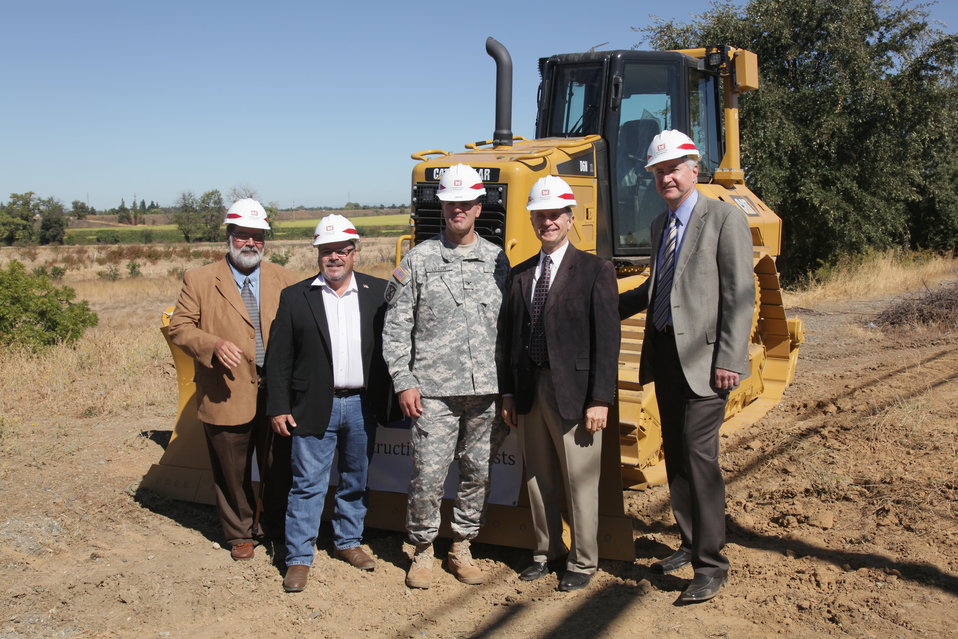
MARYSVILLE, Calif. (Sept. 20, 2010) -- Col. Bill Leady (center), commander of the U.S. Army Corps of Engineers Sacramento District, joined state and local agency representatives to break ground on construction to strengthen the 7.6-mile-long ring levee that surrounds the city of Marysville Sept. 20. Pictured with Leady are (from left to right) Bill Harris, Mayor of Marysville; John Nicoletti, Yuba County Supervisor; Congressman Wally Herger; and Mark Cowin, Department of Water Resources Director.